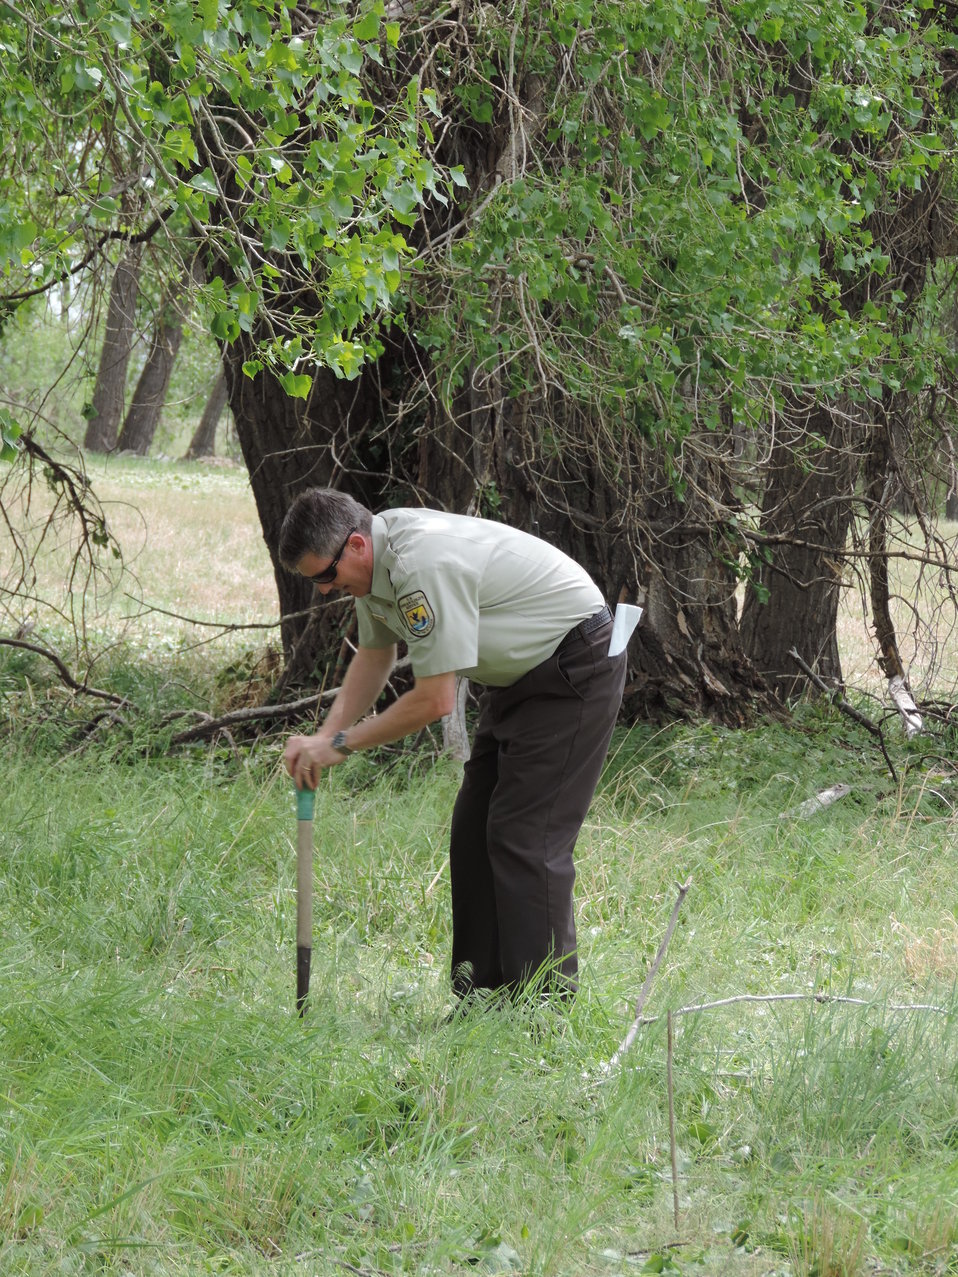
Project Leader David Lucas Planting Cottonwood Trees